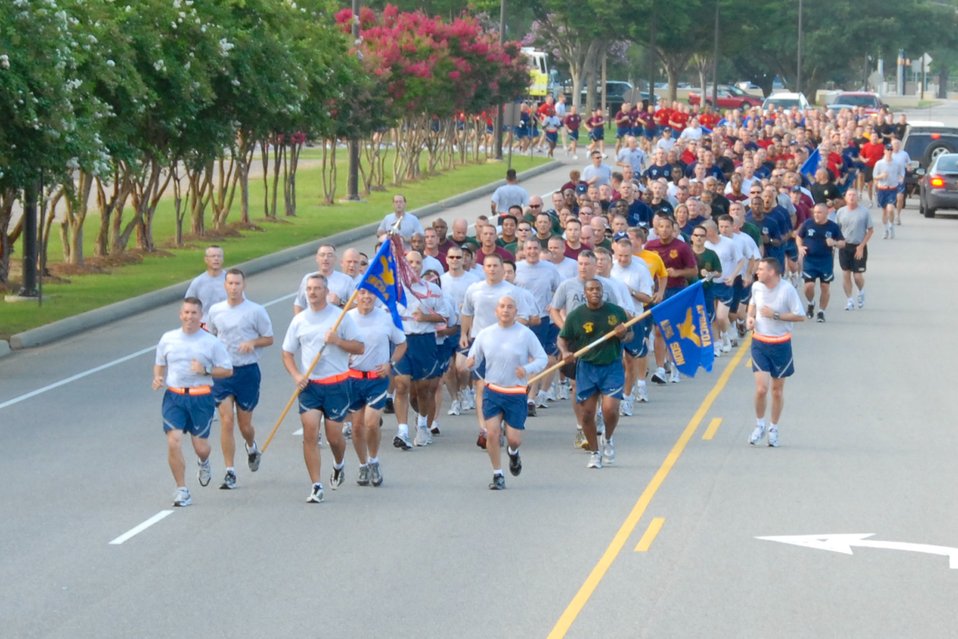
Largest NCOA class graduates

Members of the largest class to graduate from the Senior NCO Academy at Maxwell Air Force Base, Ala., joined First Sergeant Academy members to celebrate with a combined formation run July 20, 2010, at nearby Gunter Annex The SNCOA graduation took place July 21.